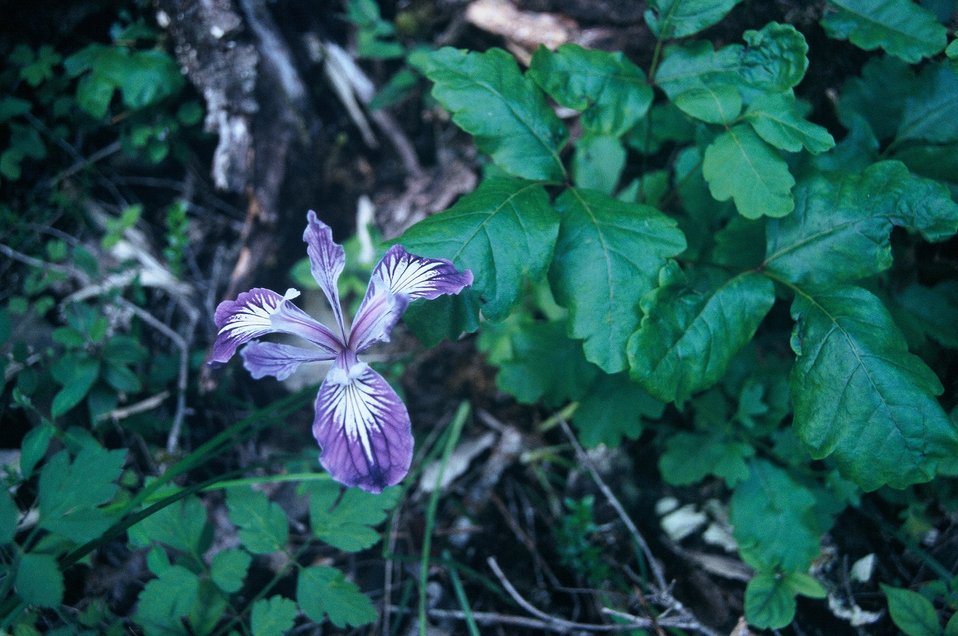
Wild section of the Rogue River from Grave Creek to Foster Bar May 19 to May 22.